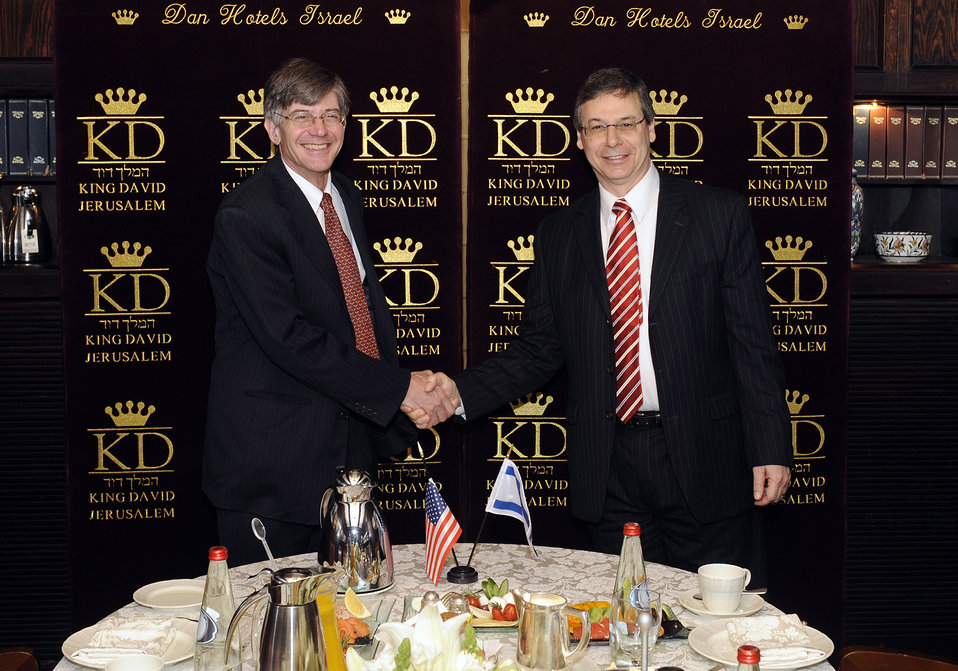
U.S. Deputy Secretary of State James B. Steinberg With Israeli Deputy Foreign Minister Danny Ayalon

U.S. Deputy Secretary of State James B. Steinberg shakes hand with Israeli Deputy Foreign Minister Danny Ayalon at the Strategic Dialogue Opening Session at the Ministry of Foreign Affairs in Jerusalem, February 25, 2010.